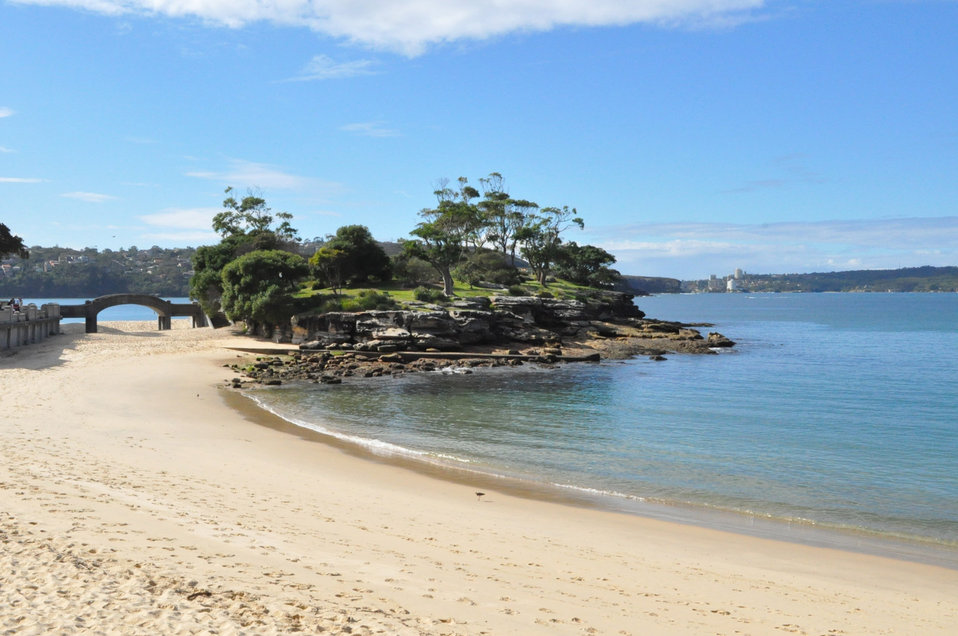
Beach

Belmoral beach, sydney nsw.